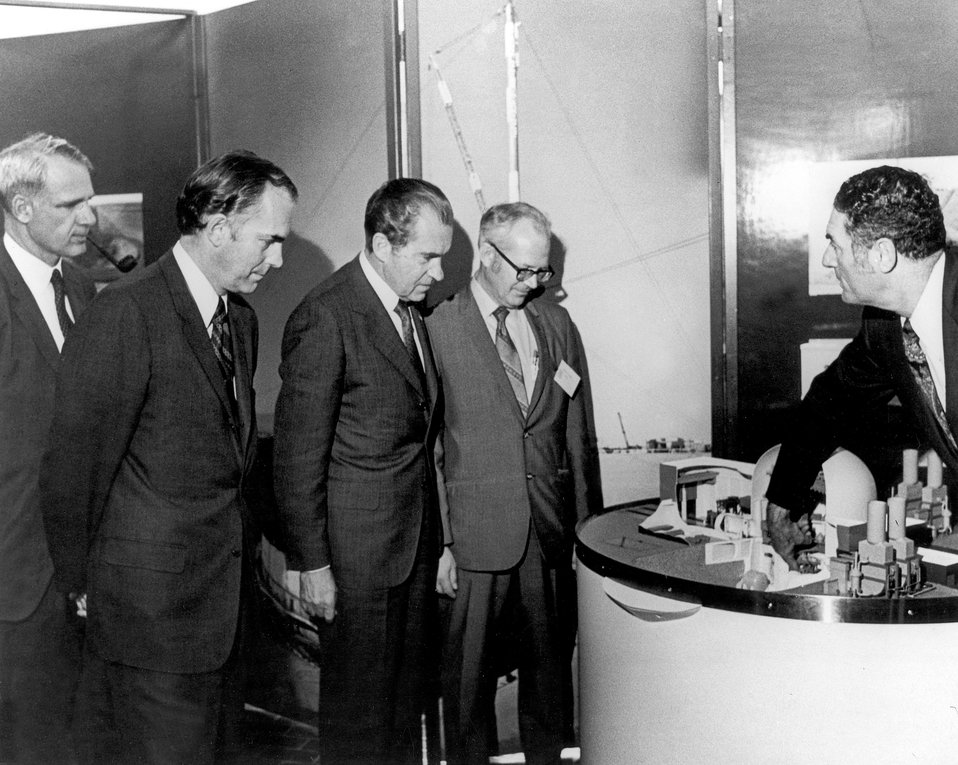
President Richard M. Nixon.